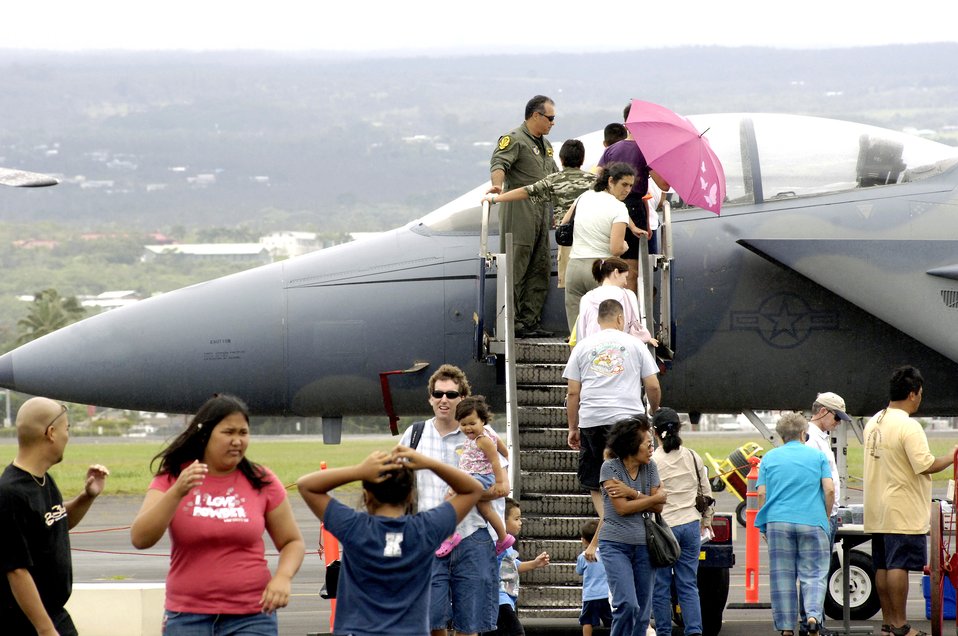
Hawaii Air National Guard hosts open house

Visitors line up to view the cockpit of an F-15E Strike Eagle on Saturday, May 20, 2006, during an Armed Forces Day air show at Hilo International Airport, Hawaii. The Hawaii Air National Guard hosted the show to give the public a chance to view various aircraft stationed in Hawaii and to generate public interest in the military.